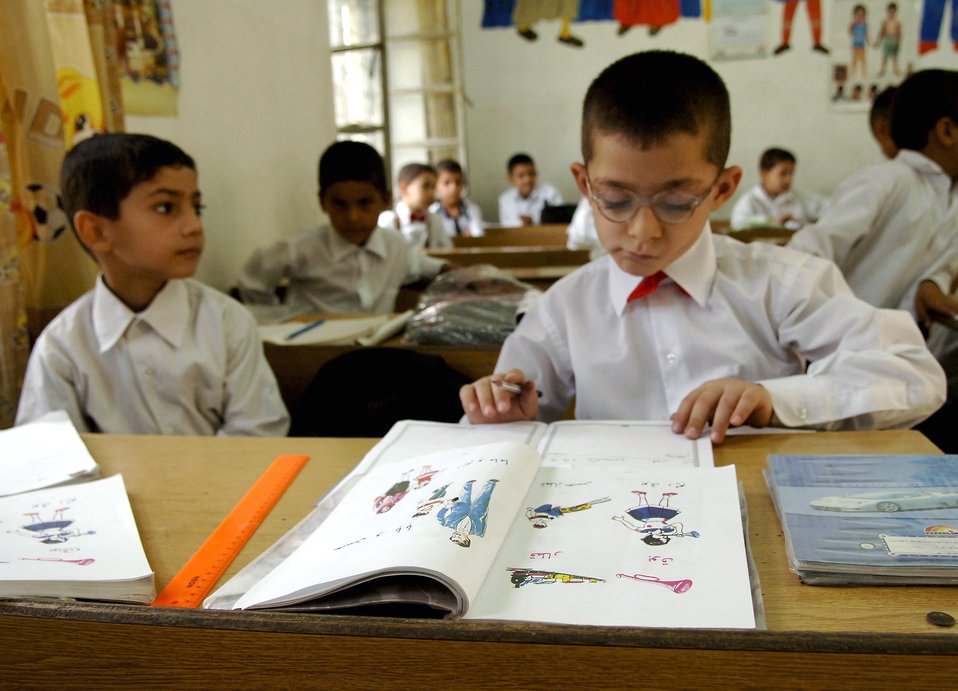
Iraqi students receive school supplies

A young Iraqi boy looks over his lessons at a primary school in the Bayaa District of Baghdad, Iraq, Oct. 31.